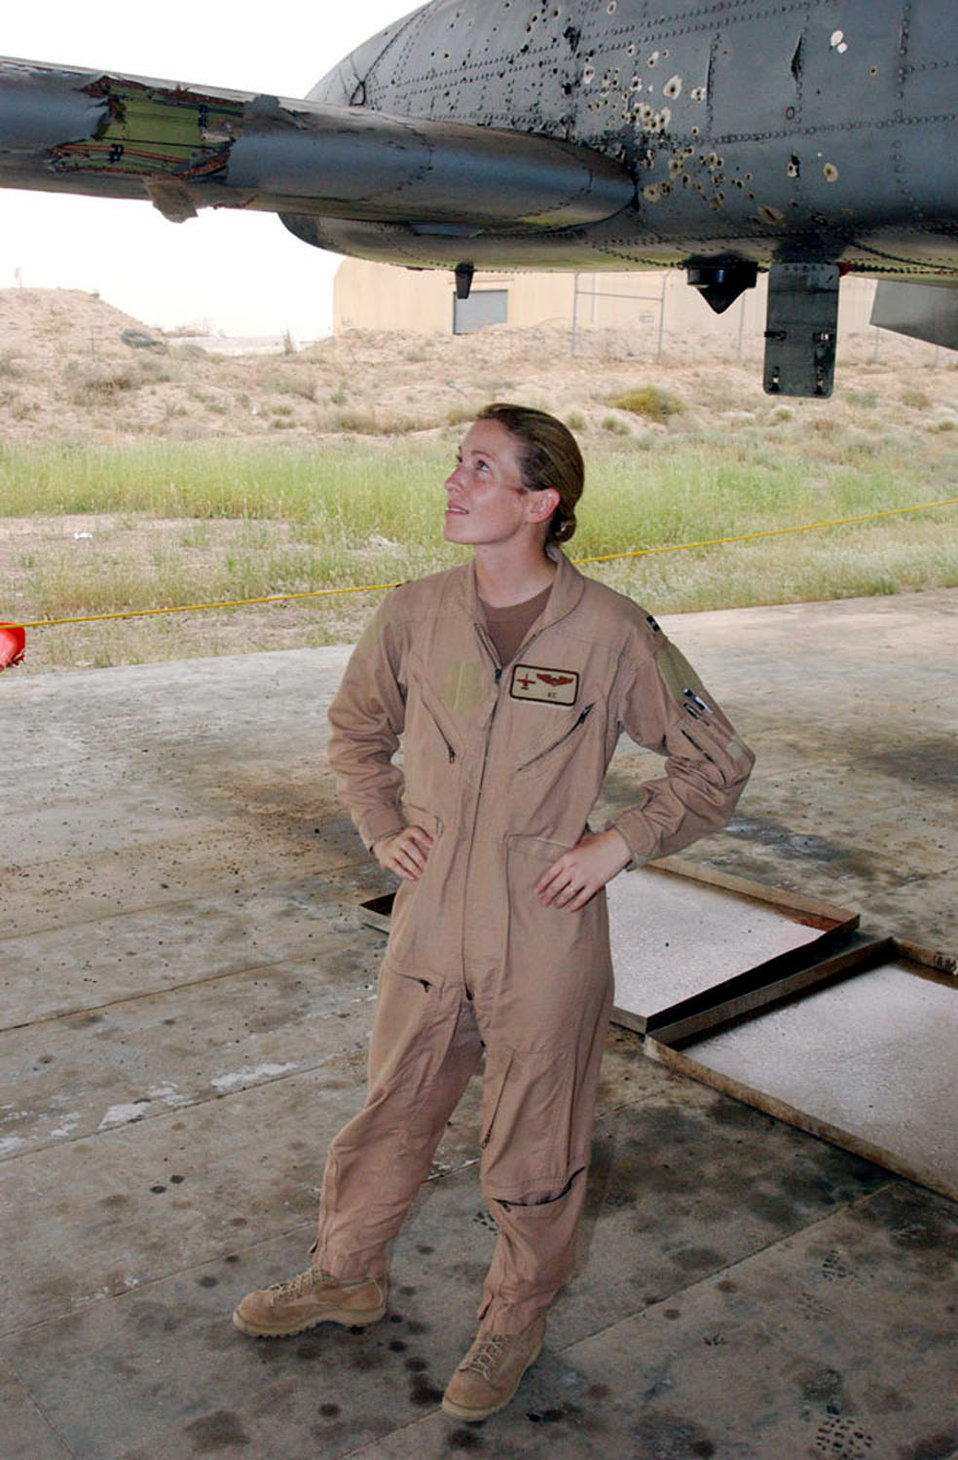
OIF hero shares her story

Then Capt. Kim Campbell, an A-10 Thunderbolt II pilot deployed with the 332nd Air Expeditionary Wing, surveys the battle damage to her airplane. Captain Kim's A-10 was hit over Baghdad during a close air support mission on April 7.